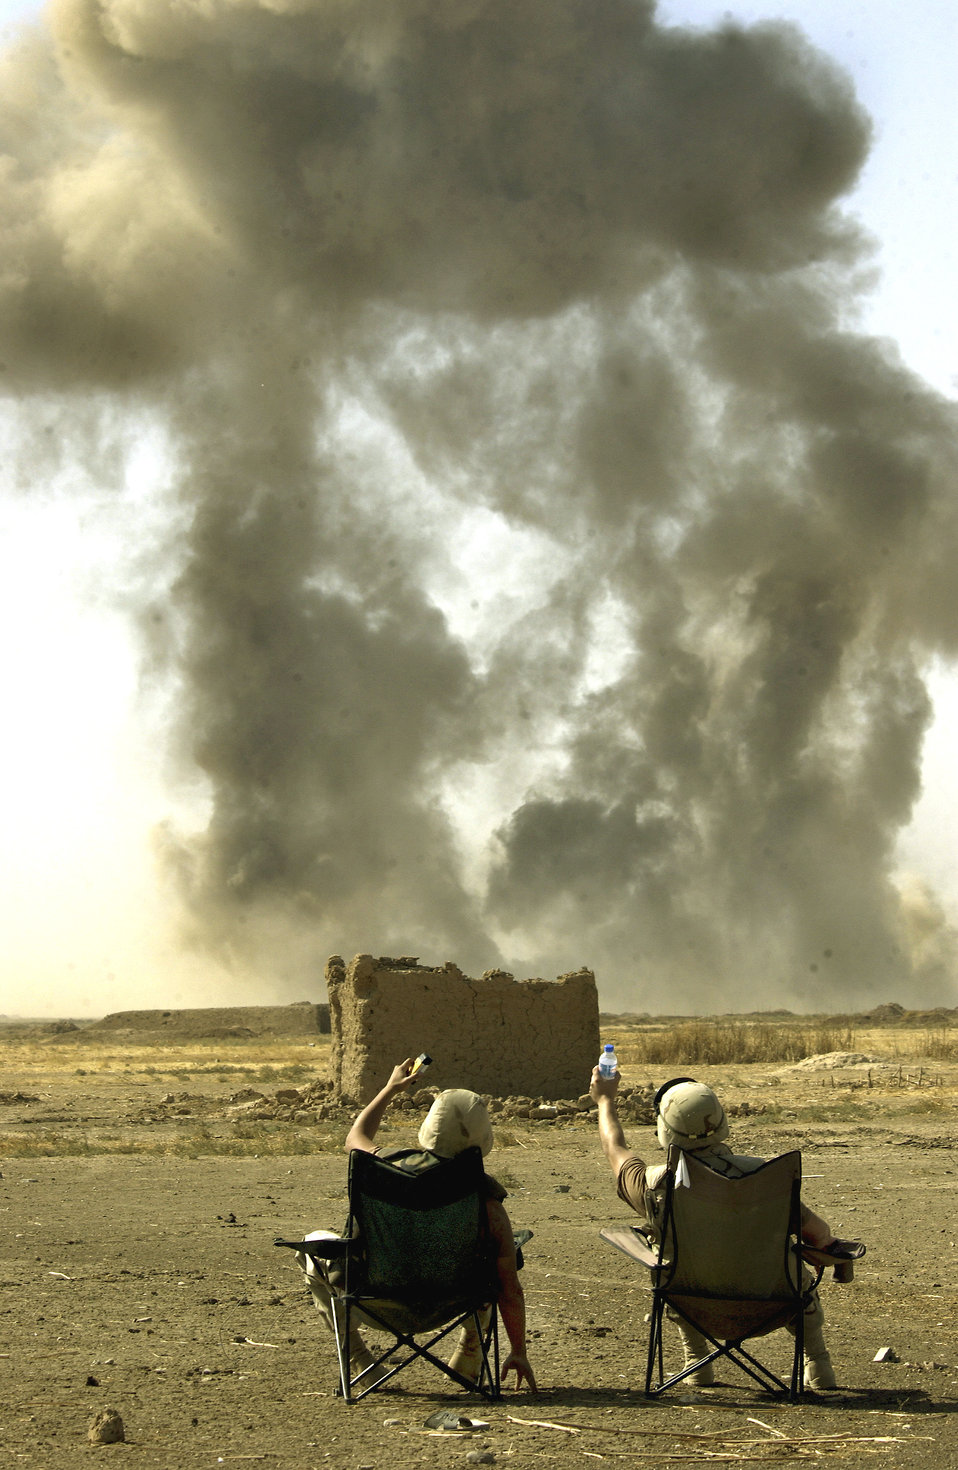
Disposing enemy ordnance

KIRKUK AIR BASE, Iraq -- Senior Airman Bryan Rodriquez (left) and Airman 1st Class Eric Schmedicke raise a toast to a successful detonation of more than 48,000 pounds of recovered Iraqi munitions at a remote explosive ordnance disposal range near here. Both airmen are assigned to the 506th Expeditionary Civil Engineer Squadron's explosive ordnance disposal flight here.